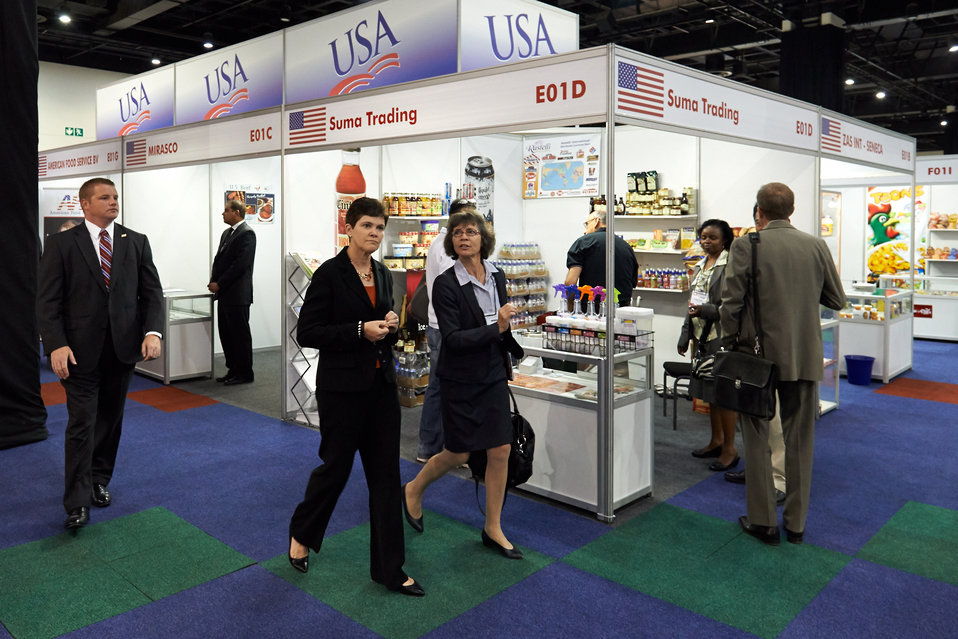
Agriculture Deputy Secretary Krysta Harden walks through exhibits on a trade mission in Johannesburg, South Africa on Wednesday, Sep. 18, 2013. Agriculture Deputy Secretary Krysta Harden led a trade mission to the Sub-Saharan Africa Business Round Table to promote U. S. agricultural trade and investment in the region, which is a long-term goal of the initiative. The trade mission includes 17 U.S. companies and 15 agricultural trade associations that represent a variety of products such as snack foods, beverages, fruit, nuts, and more.